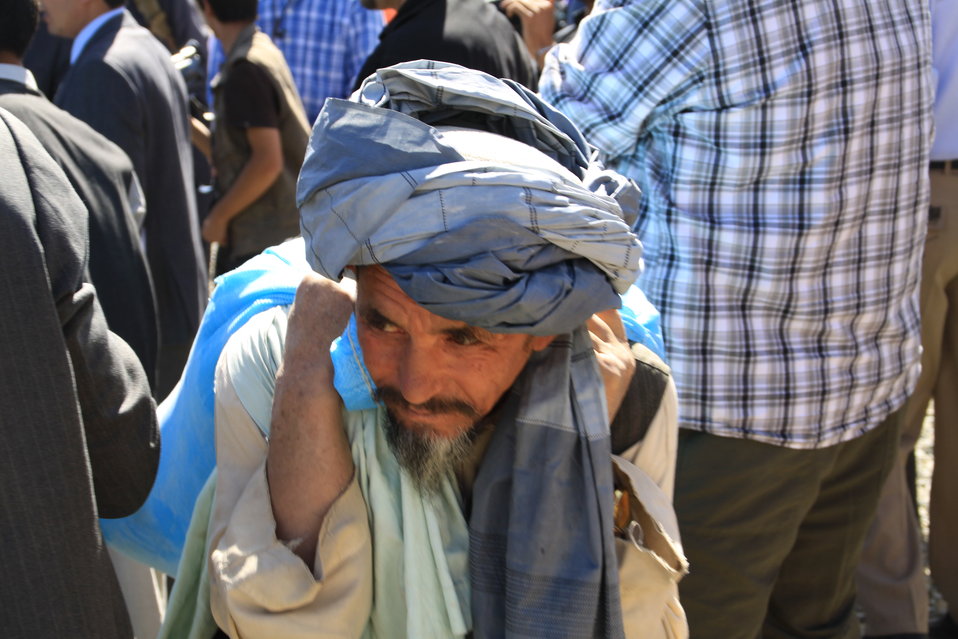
AVIPA Plus Wheat Seed Distribution 101005

US Ambassador Karl Eikenberry and USAID Acting Mission Director Kevin Brownawell joined the Minister of Agriculture, Irrigation and Livestock, H.E. Minister Mohammed Rahimi in signing a Memorandum of Understanding and distributing vouchers to area farmers for wheat and fertilizer.

US Ambassador Karl Eikenberry and USAID Acting Mission Director Kevin Brownawell joined the Minister of Agriculture, Irrigation and Livestock, H.E. Minister Mohammed Rahimi in signing a Memorandum of Understanding and distributing vouchers to area farmers for wheat and fertilizer.

US Ambassador Karl Eikenberry and USAID Acting Mission Director Kevin Brownawell joined the Minister of Agriculture, Irrigation and Livestock, H.E. Minister Mohammed Rahimi in signing a Memorandum of Understanding and distributing vouchers to area farmers for wheat and fertilizer.